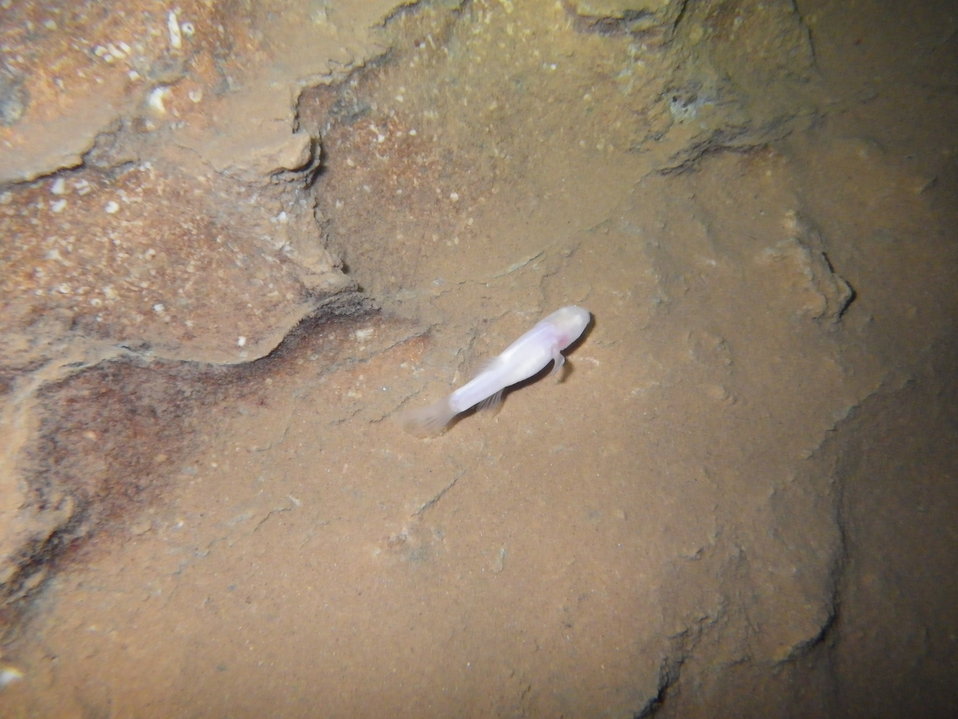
Ozark Cavefish By FWS

Ozark Cavefish. Listed as threatened under the Endangered Species Act.